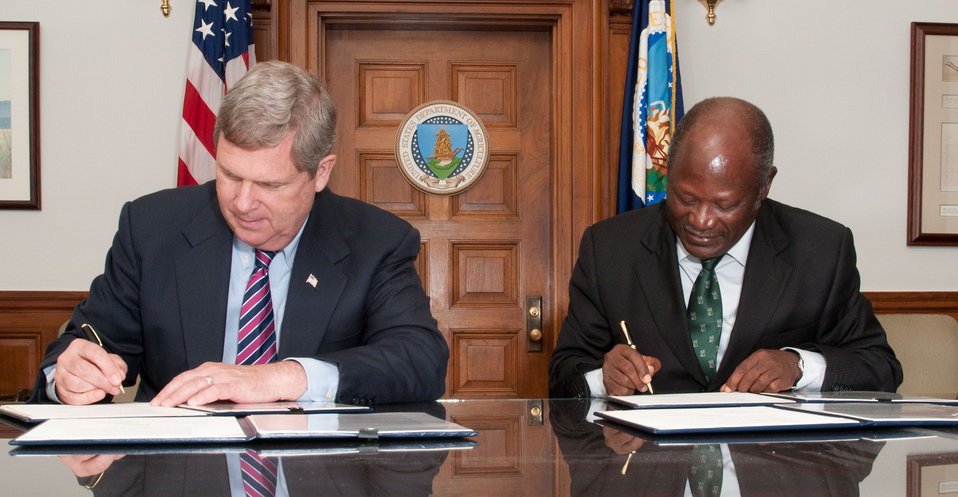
U.S. Department of Agriculture Secretary Tom Vilsack (left) and Alliance for a Green Revolution in Africa (AGRA) President Dr. Namanga Ngongi (right) sign a Memorandum of Understanding in Secretary Vilsack’s office in Washington, DC, on Thursday, May 26, 2011. AGRA’s programs integrate seeds, soils, market access, policy and partnerships and innovative finance. The alliance strives for comprehensive changes across Africa’s agricultural system. Programs also support agricultural education and water management, and the involvement and training of youth.